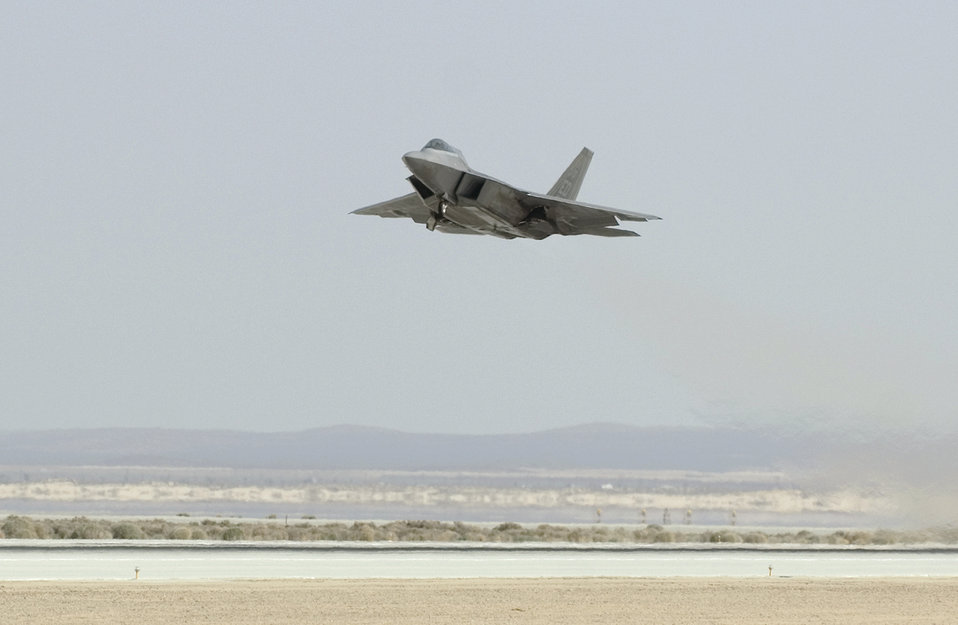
F-22 Raptor

An F-22 Raptor powered by biofuel takes off March 18, 2011, at Edwards Air Force Base, Calif. The flight was the capstone of a series of ground and flight test events conducted by members of the 411th Flight Test Squadron for the F-22, using the biofuel blend.